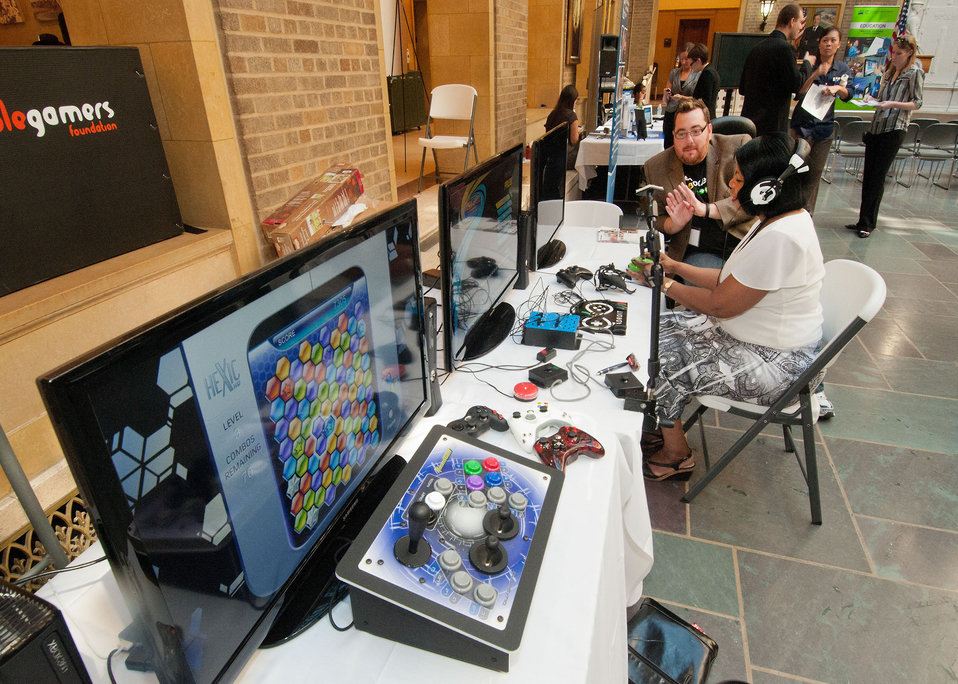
Ablegamers Foundation President Mark Barlet demonstrates games developed by Ablegamers to Lauren Beatty at the U.S. Department of Agriculture (USDA) Departmental Management (DM) Target Center 20th Anniversary at USDA in Washington, D.C. on Thursday, Sept. 13, 2012. Ablegamers develops equipment, programs and services to those living with disabilities, hardships and quality-of-life issues USDA photo by Bob Nichols.